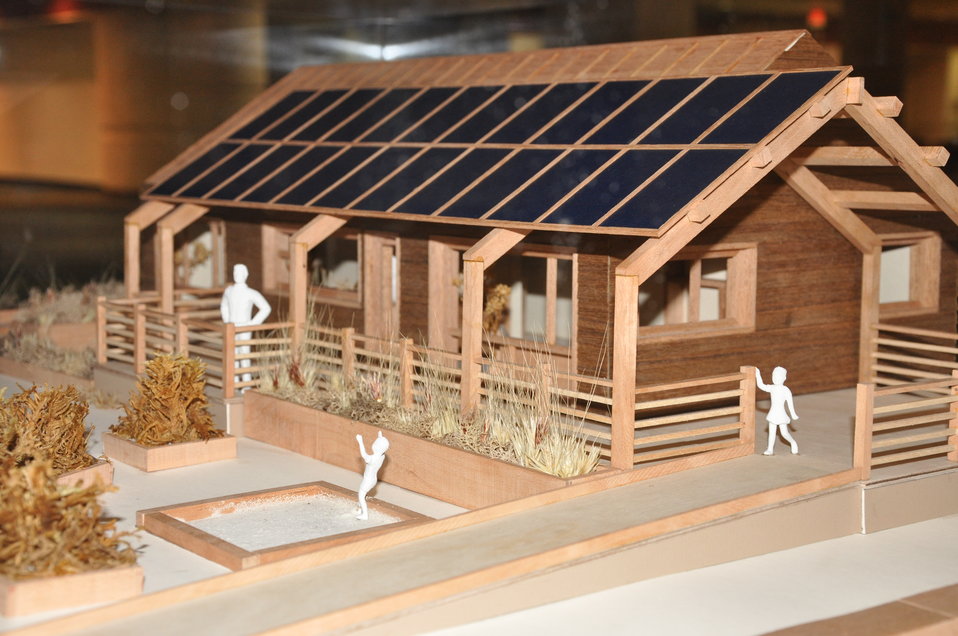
Team Massachusetts